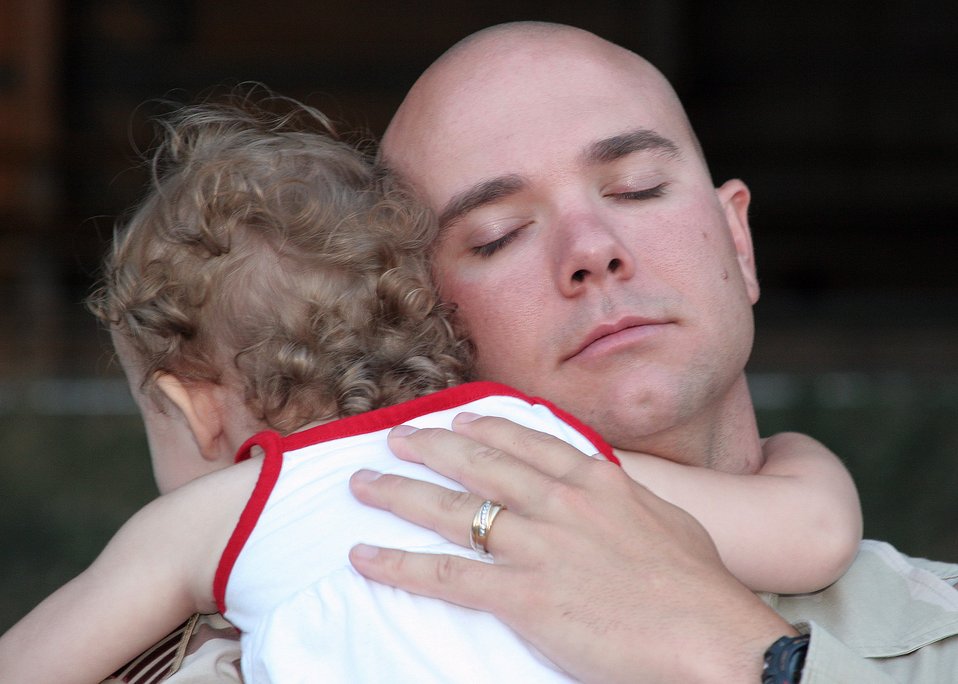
Welcome home

LACKLAND AIR FORCE BASE, Texas -- Staff Sgt. Jeremy Dial hugs his daughter after returning home recently after an eight-month deployment in Iraq. Sergeant Dial is assigned to the 37th Security Forces Squadron.